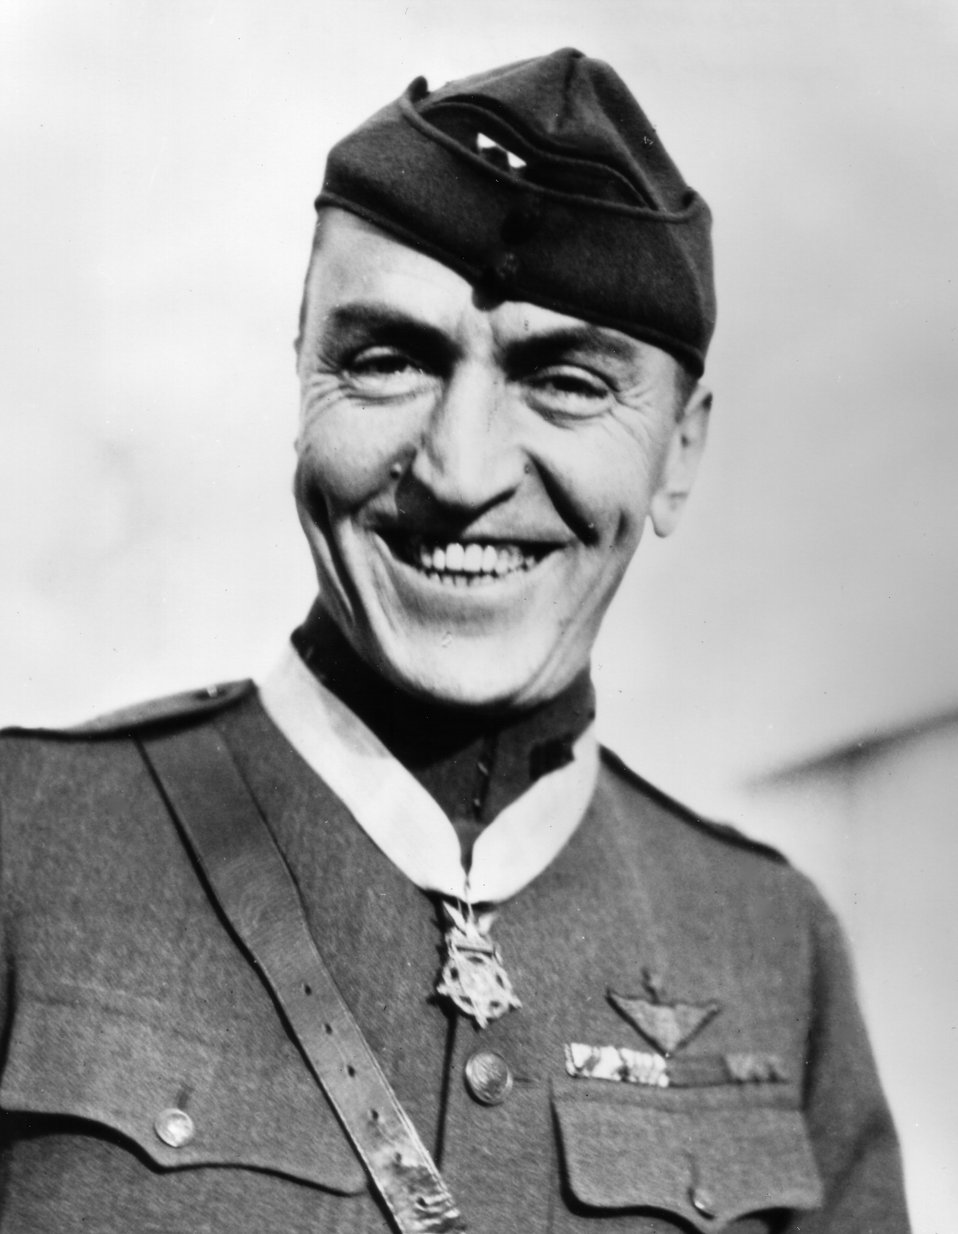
Eddie Rickenbacker

EARLY YEARS -- Capt. E.V.